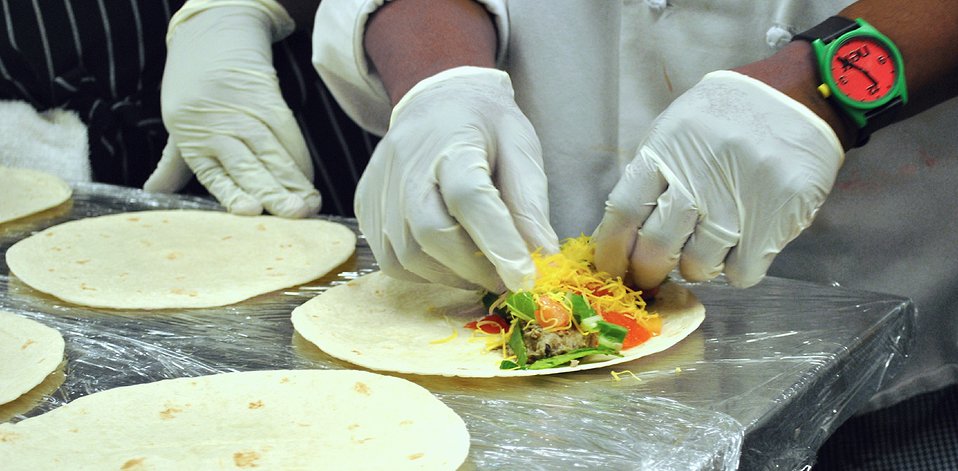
DC Central Kitchen manager Dawain Arrington shows U.S. Department of Agriculture (USDA) volunteers how to assemble and fold bean burritos. USDA volunteers prepare all of the ingredients for this dish, which includes shredded mild cheddar cheese, diced tomatoes, chopped bok choy, mashed lentils and black beans.